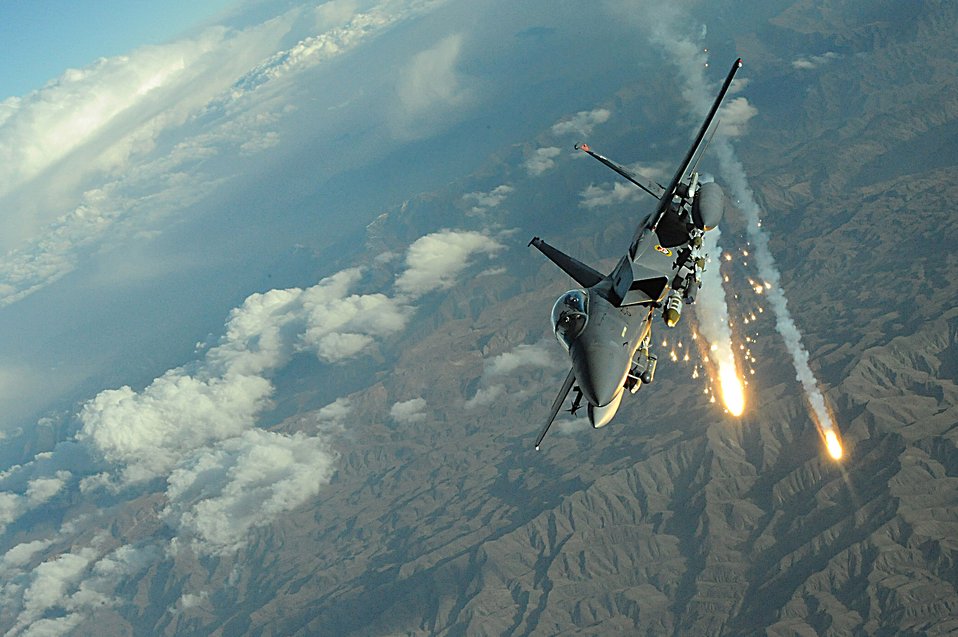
Feb. 10 airpower summary: F-15Es bomb enemy positions

An F-15E Strike Eagle deploys flairs during a recent mission over Afghanistan. The F-15E provides close-air support and armed overwatch in support of Operation Enduring Freedom.